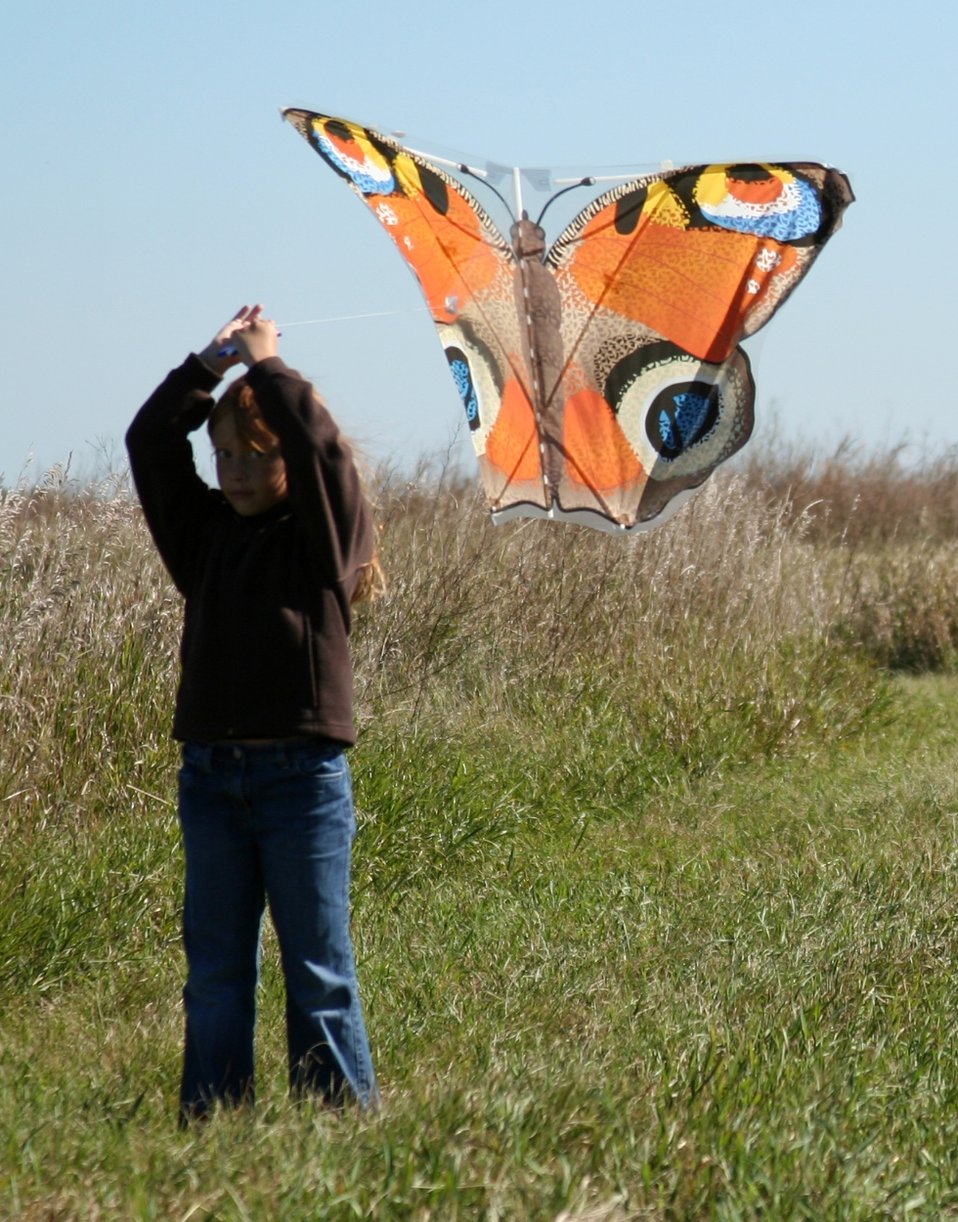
Flying a Kite

A young girl flies a kite on a beautiful September afternoon in 2010 at the Huron Wetlands Management District. The 'Kites N Flight' event focused on getting kids outdoors, and featured an educational piece on bird flight and migration.